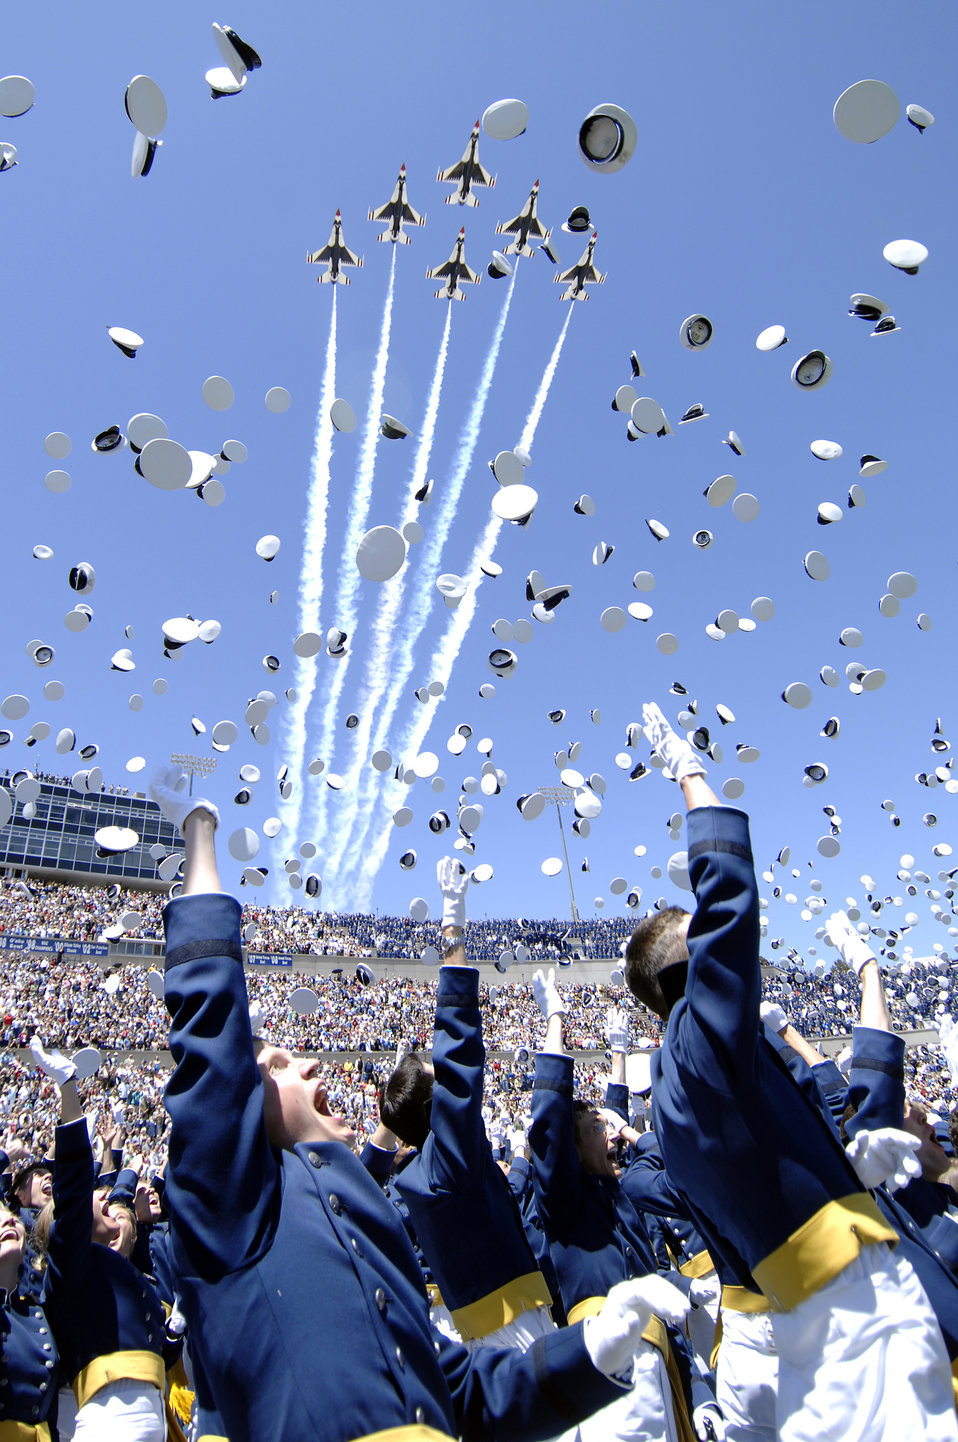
2009 U.S. Air Force Academy graduation

The 1,046 newly commissioned second lieutenants at the U.S. Air Force Academy commemorate their achievement by tossing their hats as the Air Force Thunderbirds fly over Falcon Stadium May 27.